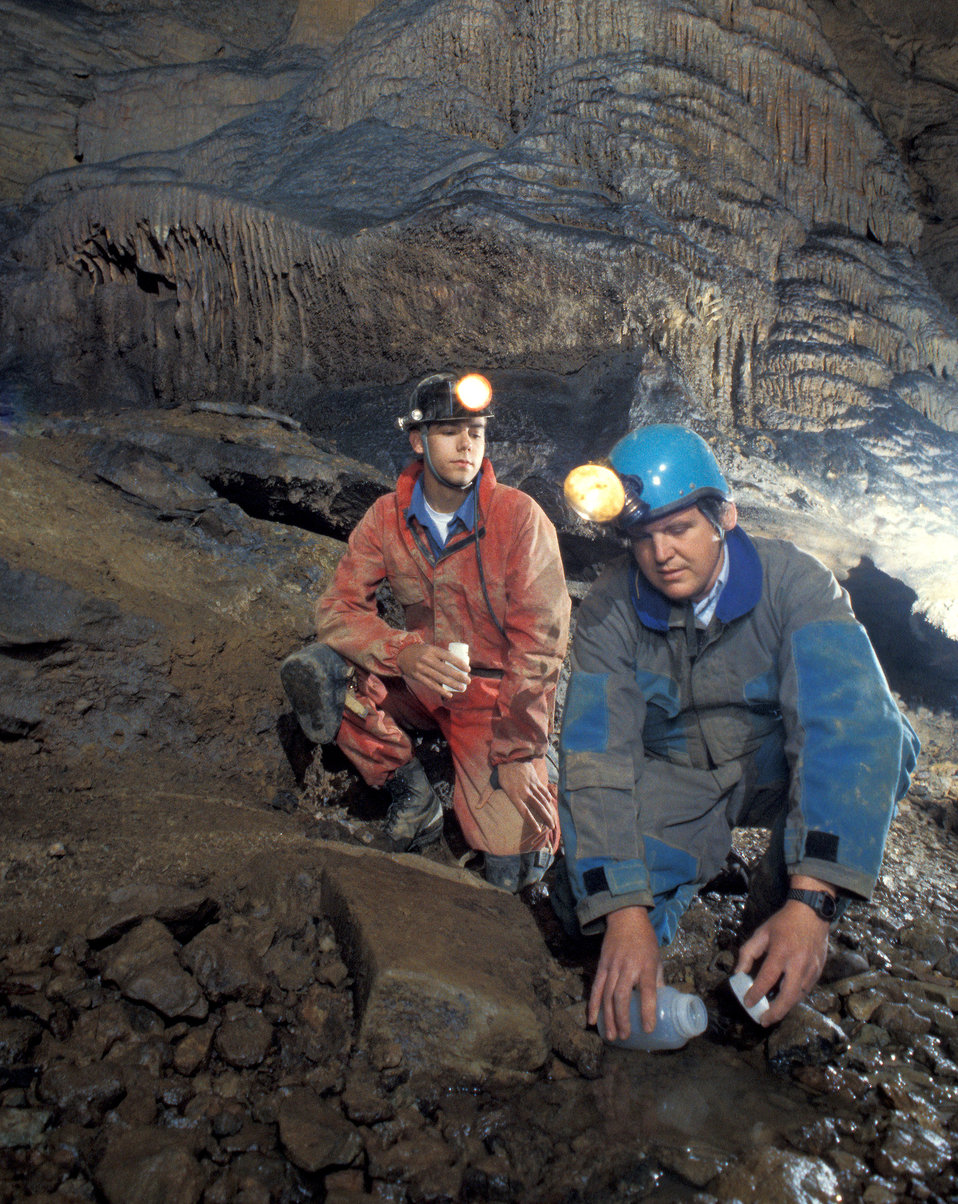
U.S. Department of Agriculture (USDA) Agricultural Research Service (ARS) hydrologist Doug Boyer (right) and aide Derek Hall collect water samples from a stream in a West Virginia limestone cave. The calcite formation in the background is The Haystack in McClung's Cave.